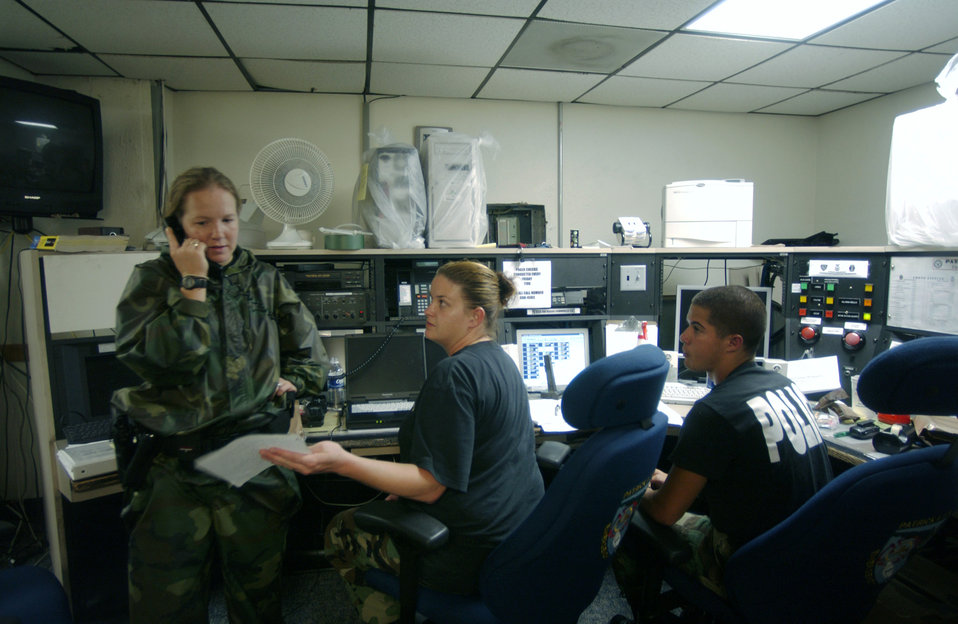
Hurricane Frances

PATRICK AIR FORCE BASE, Fla. -- Capt. Cheryl Morgan (left) coordinates recovery operations from the base fire department control center here Sept. 5, after Hurricane Frances hit the base and surrounding communities. Captain Morgan, an operations officer with the 45th Security Forces Squadron, is part of the 45th Hurricane Recovery Team. The team is responsible for securing and establishing the base's operational readiness once a storm moves throughthe area.